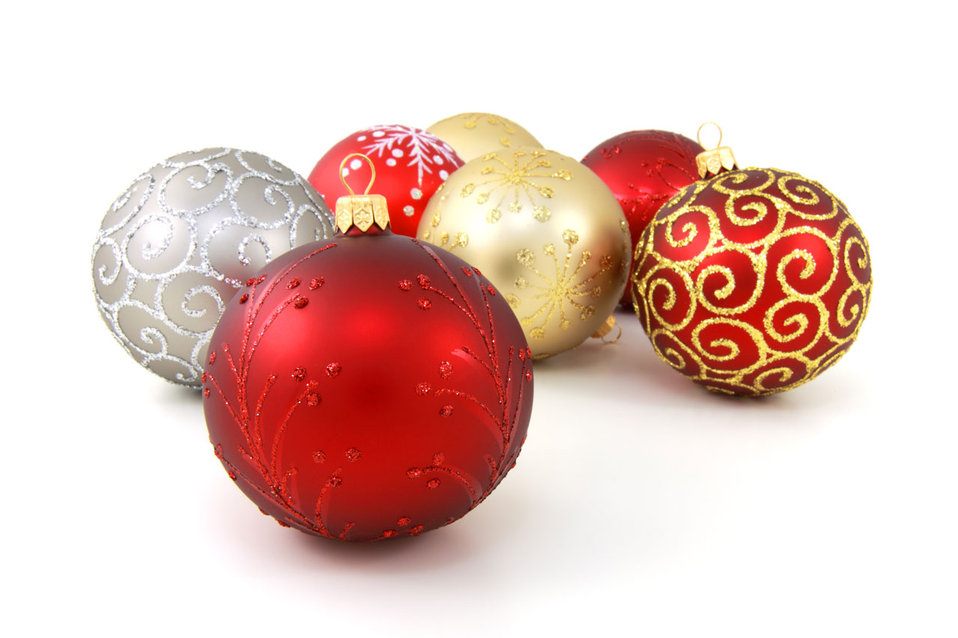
Christmas baubles

Various christmas baubles on white background.